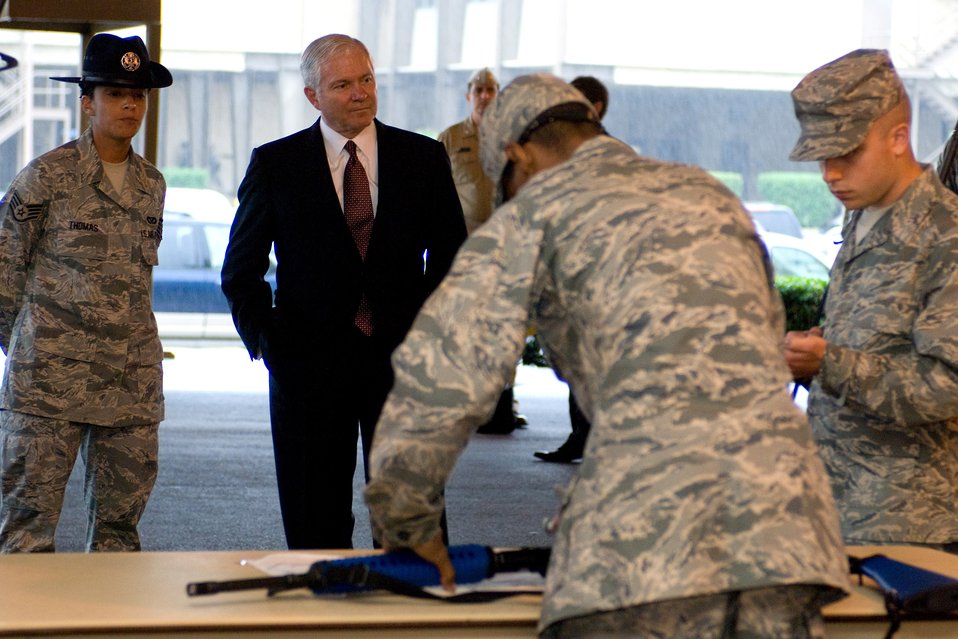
SECDEF visits Airmen, tour BMT facilities

Secretary of Defense Robert M. Gates watches as basic trainees disassemble and reassemble M16 rifles during a visit to Lackland Air Force Base, Texas, July 24.